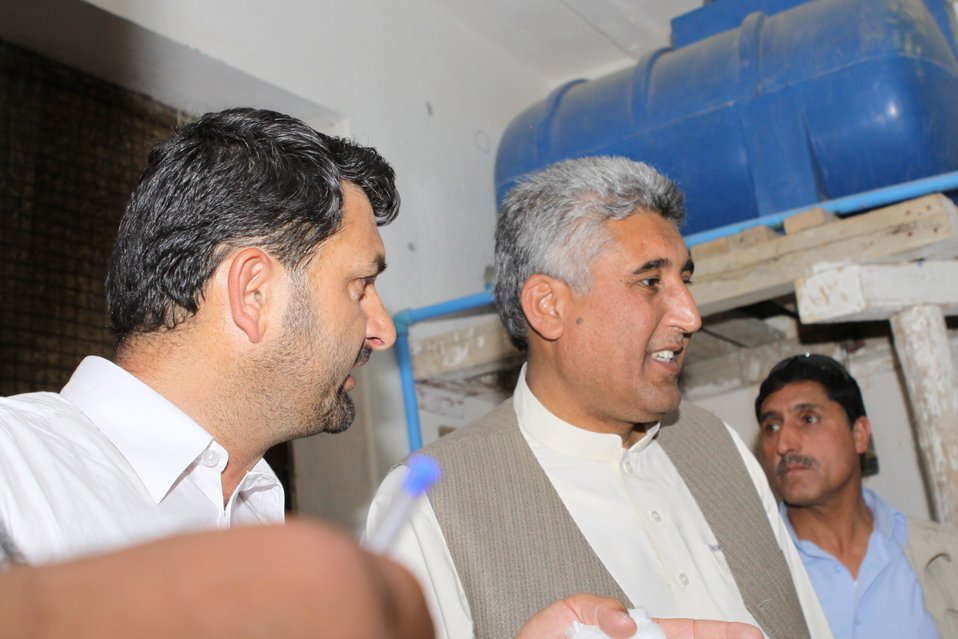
Bolan Poultry Farm